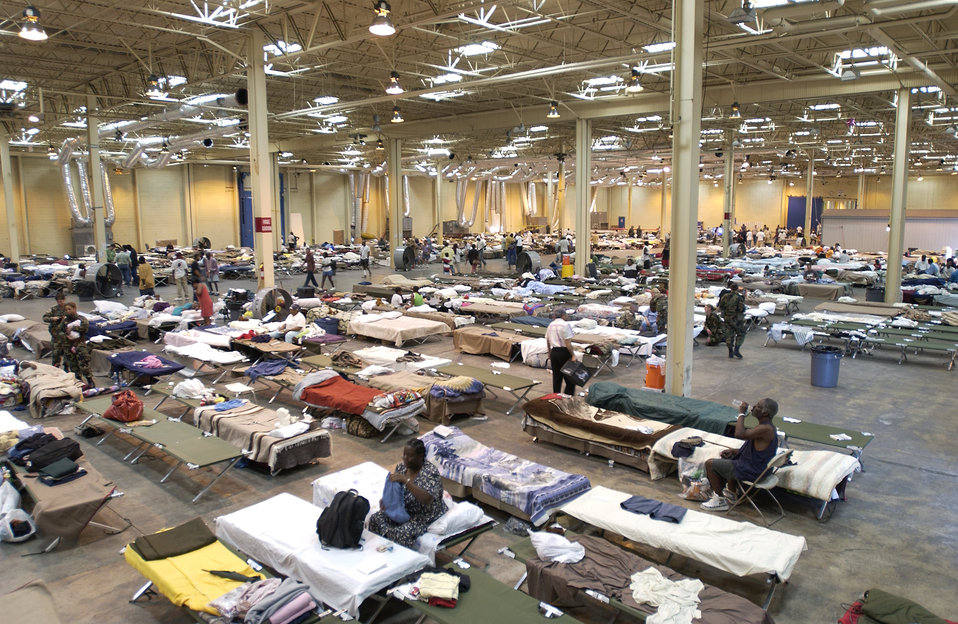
Hurricane relief

SAN ANTONIO - Gulf Coast evacuees relax on cots set up inside warehouses here converted to temporary shelters. They were inprocessed, given a medical checkup, fed and provided donated clothing and other personal needs.